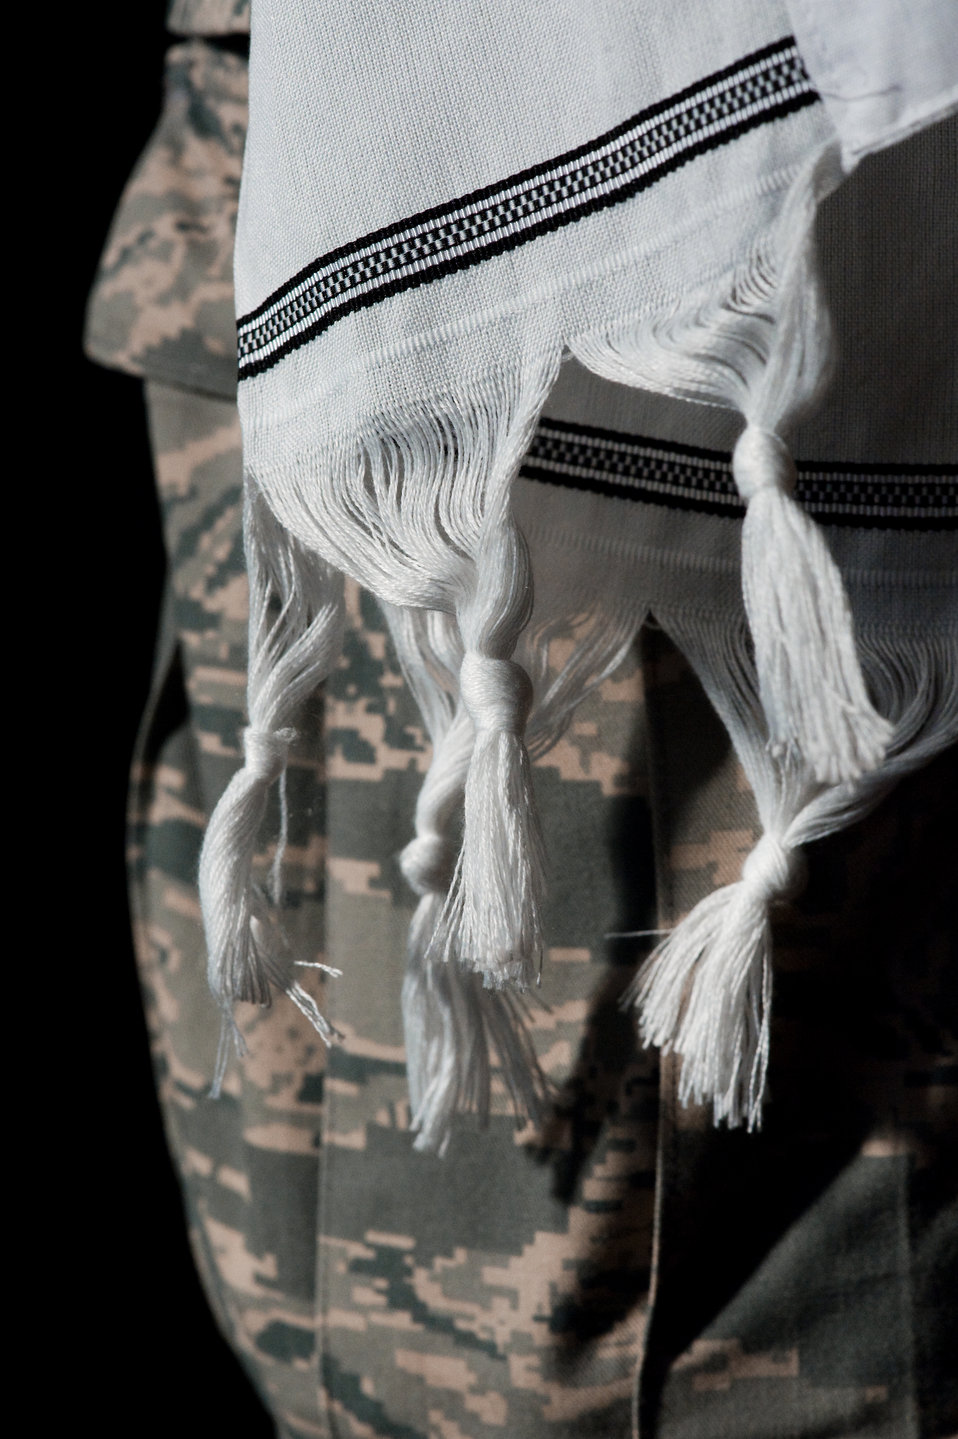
U.S. Air Force Chaplaincy

The tzit tzit, knotted fringe at the end of the prayer shawl worn by U.S. Air Force Rabbi, Chaplain, Captain Sarah D. Schechter during the evening le'il shabbat service on Friday, Sept. 4, 2009 symbolize the 613 commandments in the Torah. At Lackland Air Force Base's Airmen Memorial Chapel more than 25 basic military trainees and other attendees participated in a religious education class, then Ma'ariv prayer service for the setting of the sun, followed by a meal provided by lay leaders supporting the service. Because of training schedules some ceremonies and events are earlier than traditionally held. By order of commanders, those who want to attend any or all religious services of their choosing are given full permission and opportunity to do so. Chaplain, Captain Schechter is an Operation Iraqi Freedom veteran and considers her deployment there to be one of the highlights of her career. Schechter is the first woman rabbi in the U.S. Air Force.